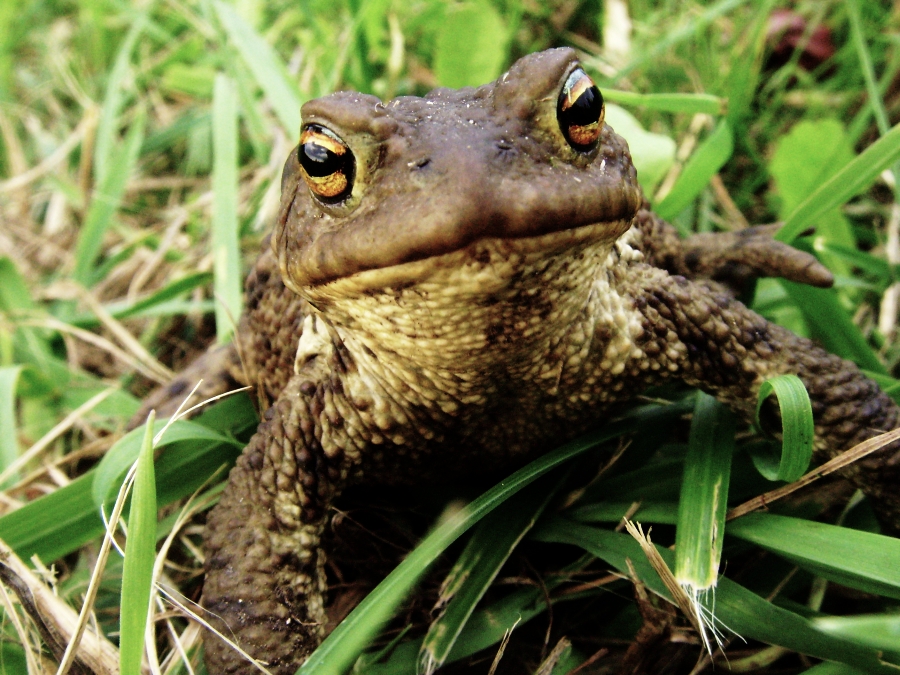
a photo i made by myself